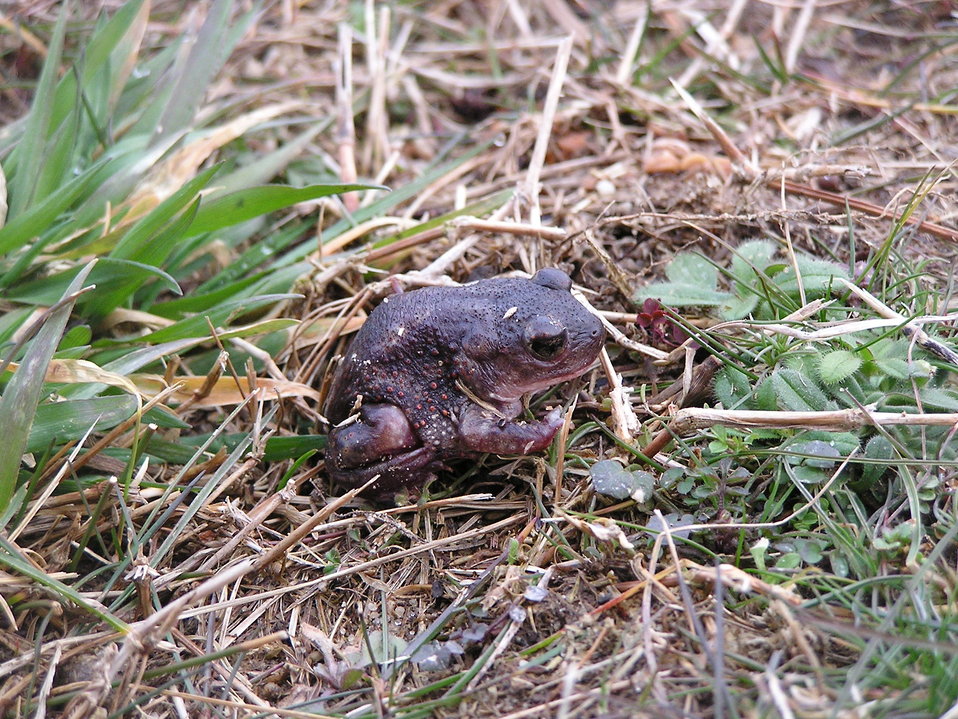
Eastern Spadefoot Toad at Cape May National Wildlife Refuge.